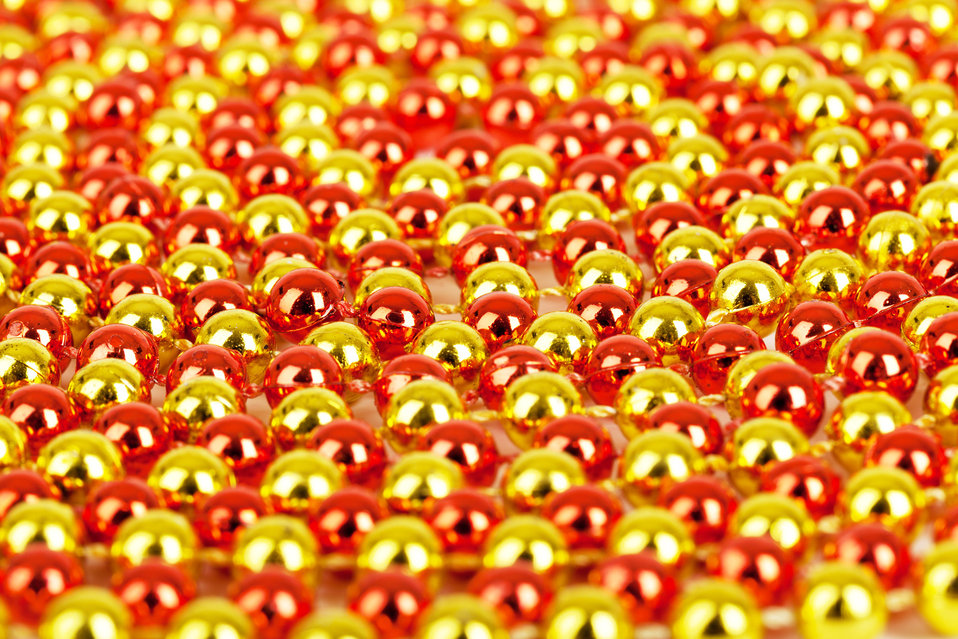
Red and yellow pattern

Red and yellow christmas balls pattern.